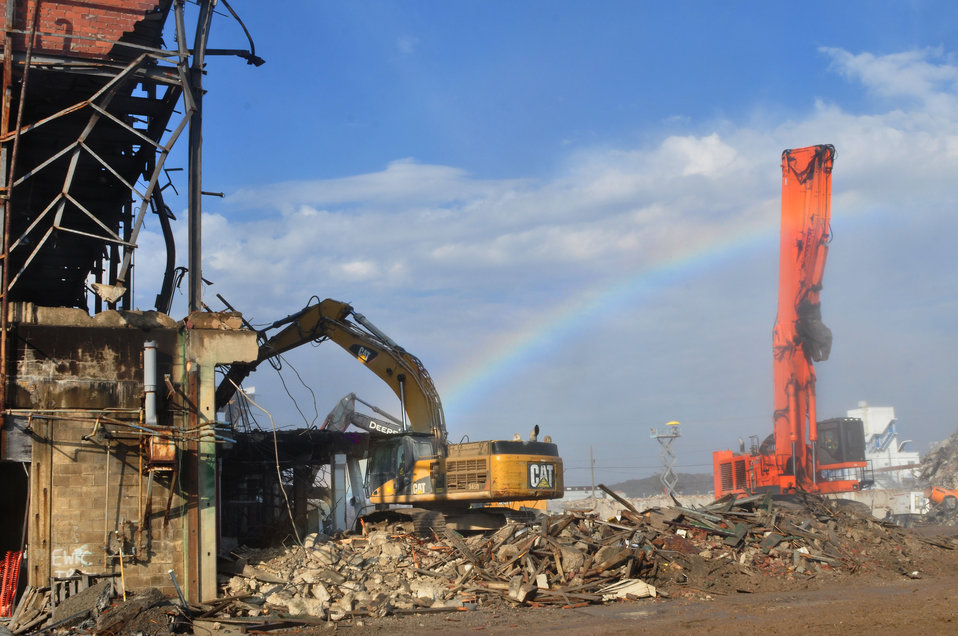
D and D Clean Up Work at K-25 Oak Ridge 2013

13-124-118 DOE photo Lynn Freeny 10-30-2013 Oak Ridge Tennessee